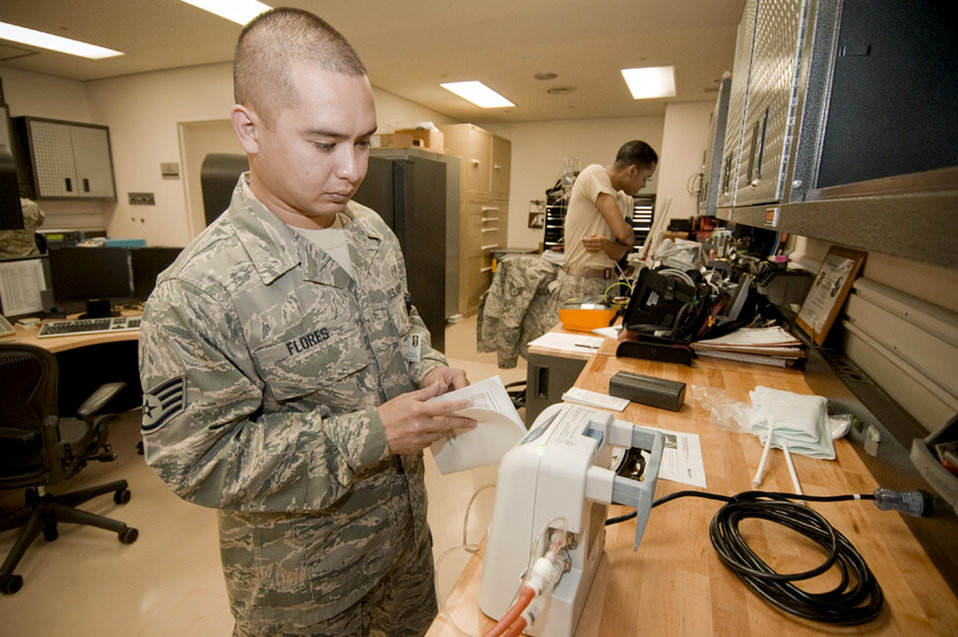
BMETs deliver

Staff Sgt. David Flores calibrates medical equipment used to treat patients with deep-vein blood clots Sept. 21, 2010, at the hospital at Misawa Air Base, Japan. Sergeant Flores is a 35th Medical Support Squadron biomedical equipment technician.